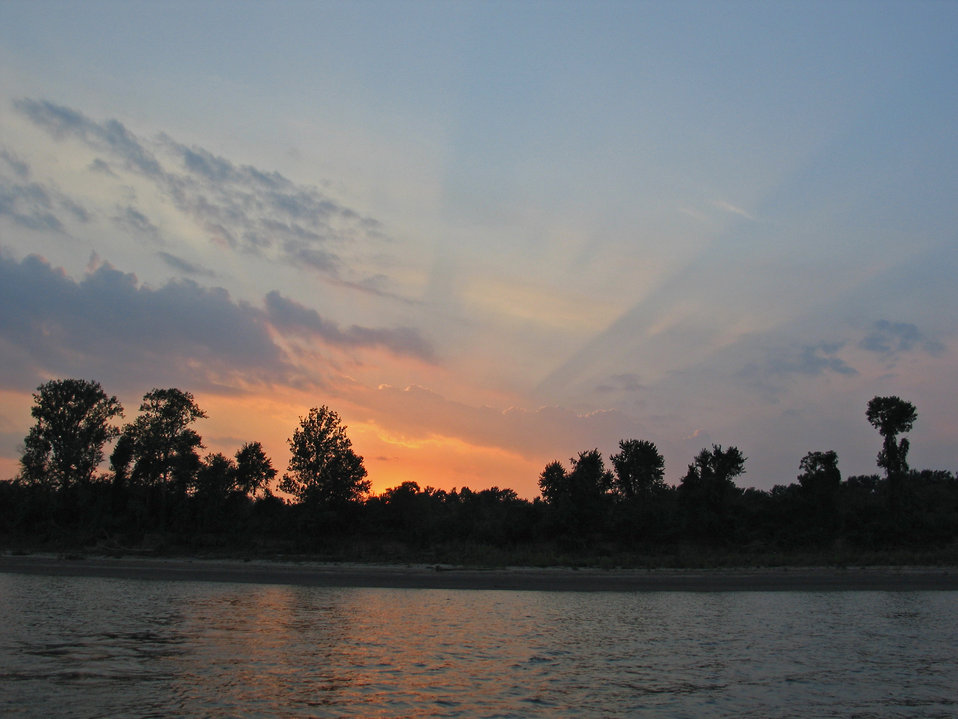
Sunset over the Ohio River

Ohio River Islands National Wildlife Refuge, WV.